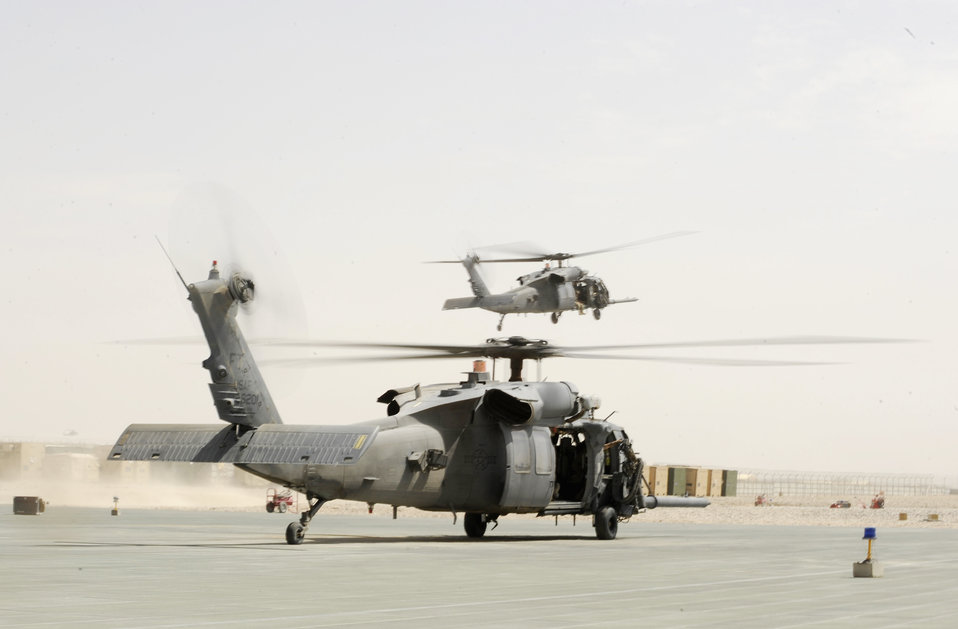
Maintenance Airmen ensure rescue missions save lives

An HH-60 Pave Hawk aircrew and pararescuemen assigned to the 41st Expeditionary Rescue Squadron return from an alert-call mission April 16, 2010, at Camp Bastion, Afghanistan.